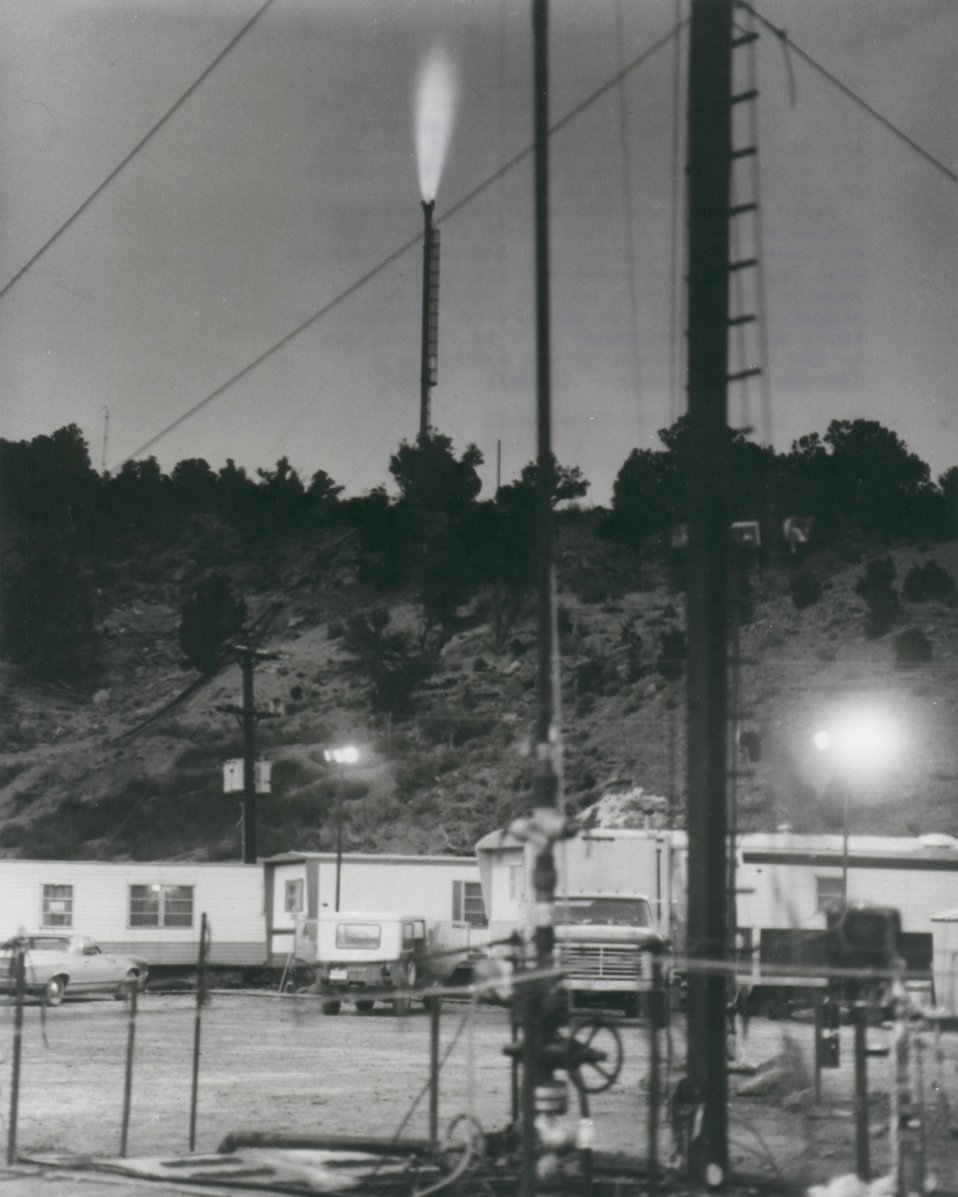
Project Rio Blanco took place in the Piceance Basin of northwest Colorado in May, 1973. Circa 1973.